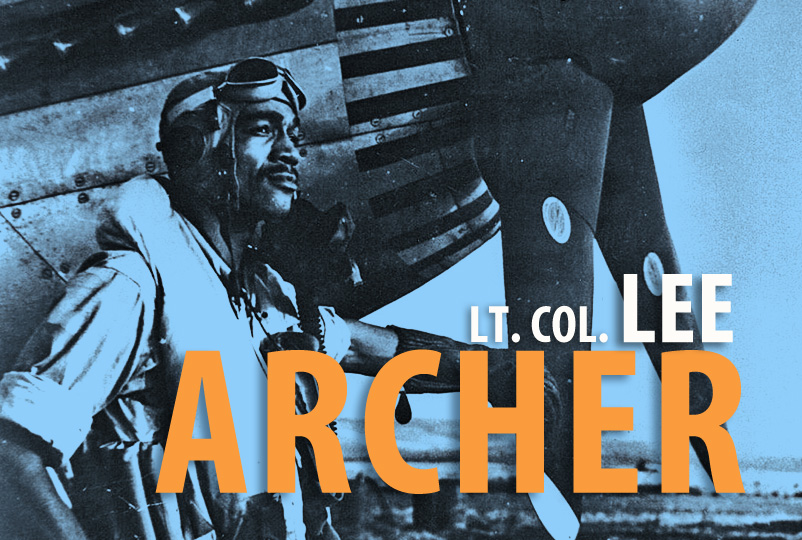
Lt. Col. Lee Archer